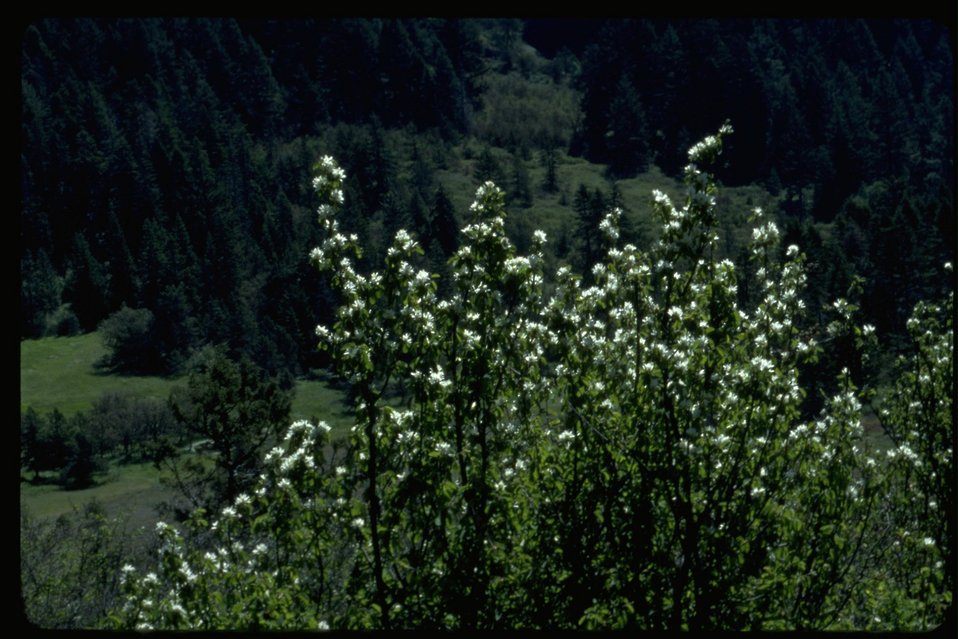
Medium shot of Service Berry.